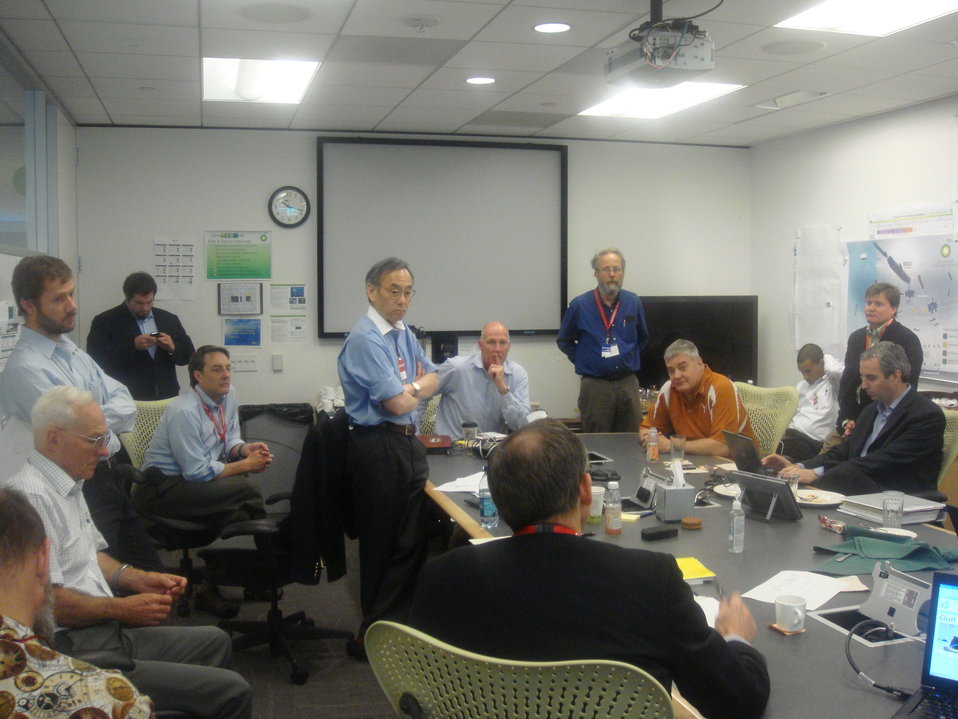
U.S. Energy Secretary Steven Chu confers with scientific experts and BP officials on the 'top kill' strategy